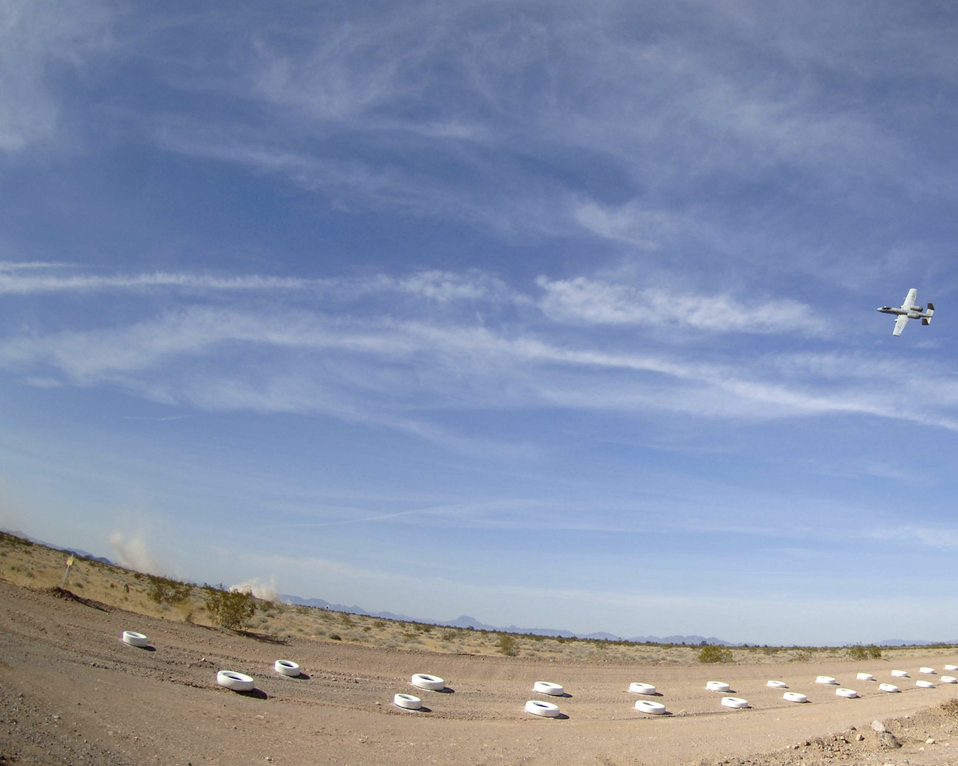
Hawgsmoke 2006

An A-10 Thunderbolt II, fires the 30 mm gun at a low angle strafe, as part of the 2006 Hawgsmoke competition, Thursday, March 23, 2006, at the Barry-Goldwater Range, Gila Bend Air Force Auxiliary Field. There are four parts of the competition. Each team has four members in which they have 100 bullets each to use toward the target. This year's competition coincides with the 30th anniversary of the Warthog. Twenty squadrons from around the world come together to gain the honor of the